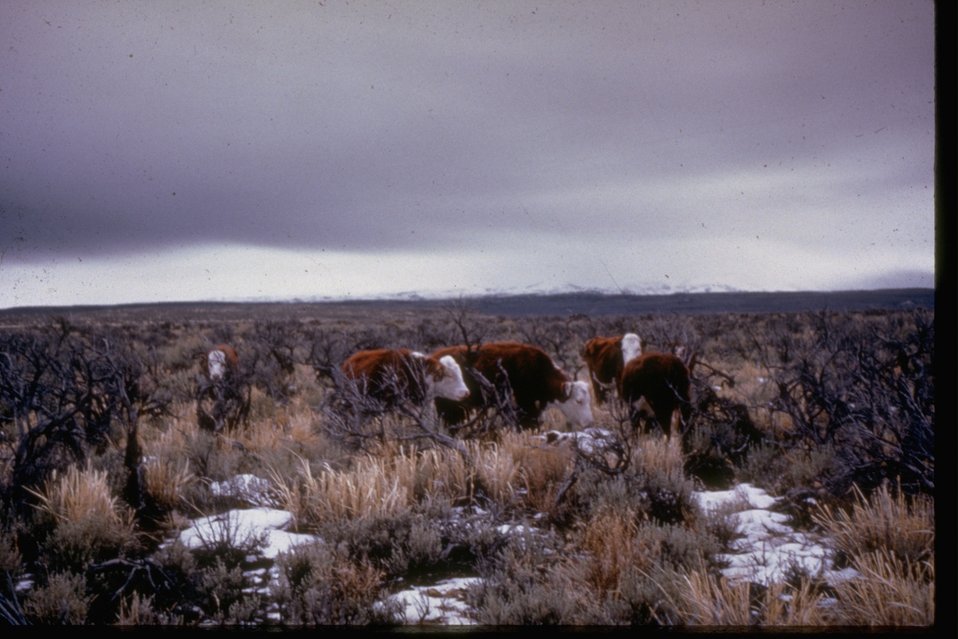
Cattle grazing in sage spotted snow.